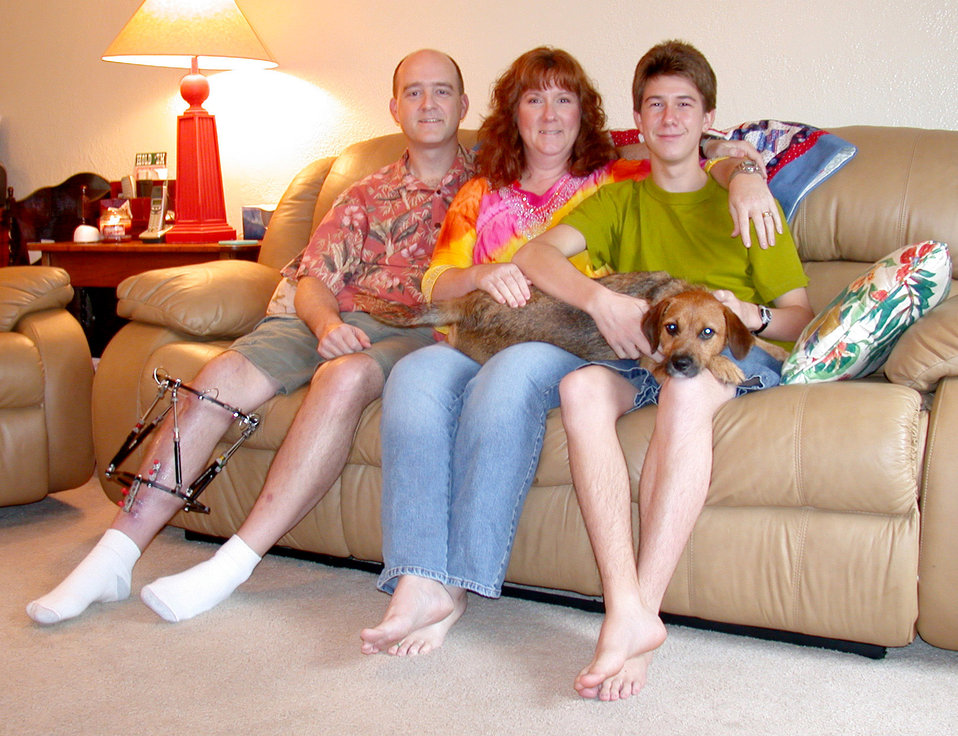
Mine explosion puts two Airmen on different paths to recovery

Maj. Matthew Conlan, who was seriously injured a year ago in a land mine blast in Afghanistan, is recovering in San Antonio with his wife, Becky, and son, Cameron.